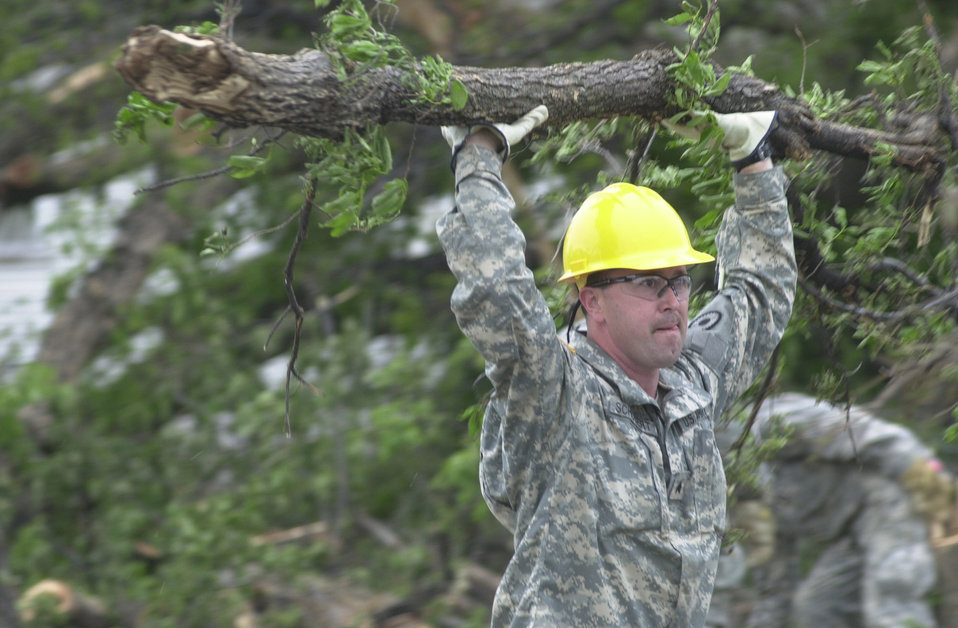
National Guard cleaning up devastated Kansas town

U.S. Army Sgt. Frankie Schubert clears a tree May 8 in front of the courthouse of Greensburg, Kan., after an F5 tornado decimated the town May 4. Sergeant Schubert is assigned to the 242nd Engineering Company of the Kansas National Guard. Around 500 Army and Air National Guardmembers are in Greensburg removing debris, providing security, generating power, preparing food and performing other disaster relief functions.